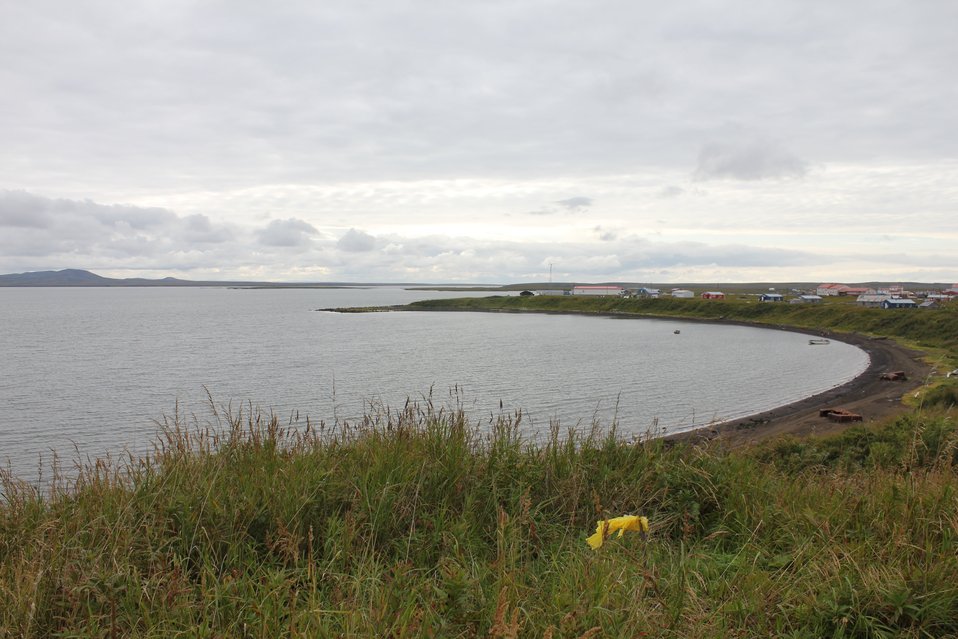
The view of St. Michael from the same vantage point as sketched by Henry Elliott in 1870. See: image line5141.